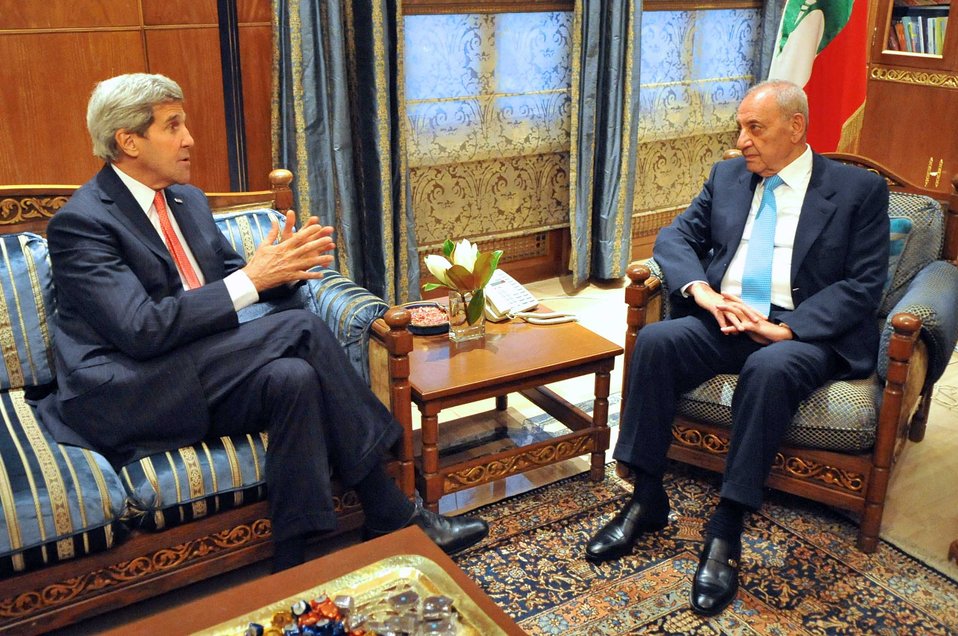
Secretary Kerry Speaks With Lebanese Parliamentary Speaker Berri in Beirut

U.S. Secretary of State John Kerry meets with Lebanese Parliament Speaker Nabih Berri in Beirut, Lebanon, on June 4, 2014.